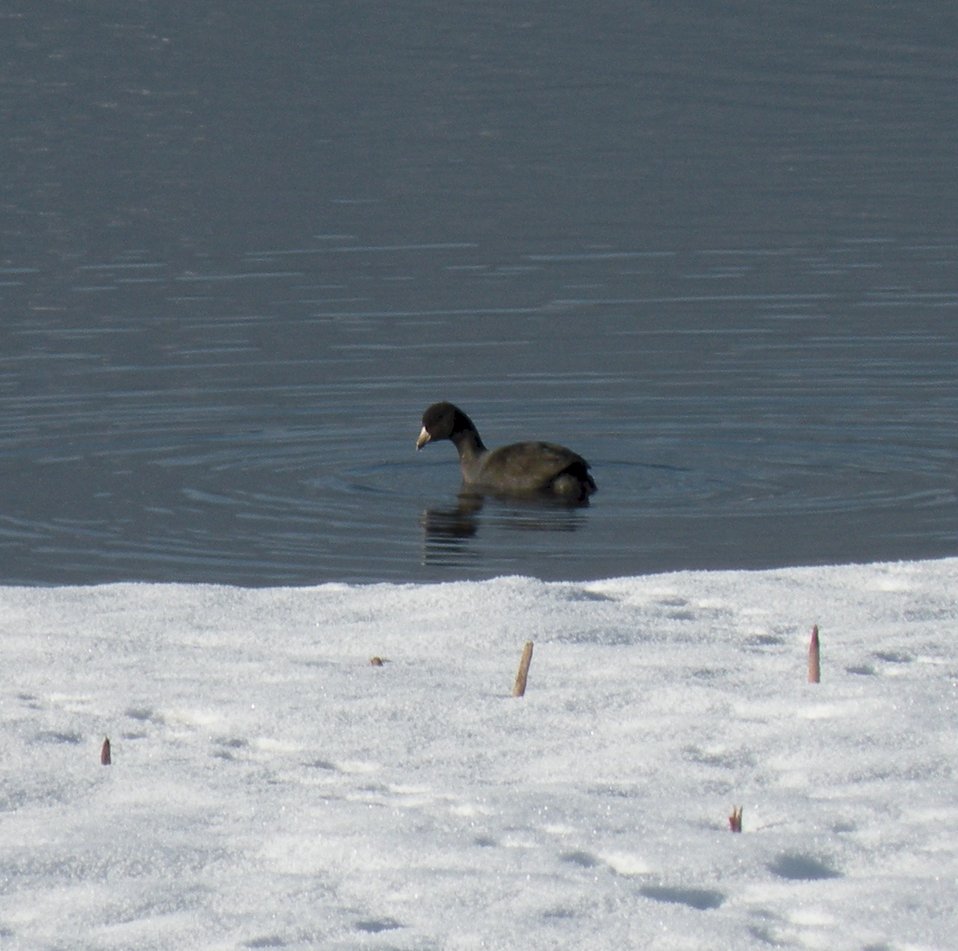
American Coot

A late migrant or wintering coot feeding in warm water spring discharge site (Pond 6) on Lee Metcalf National Wildlife Refuge.